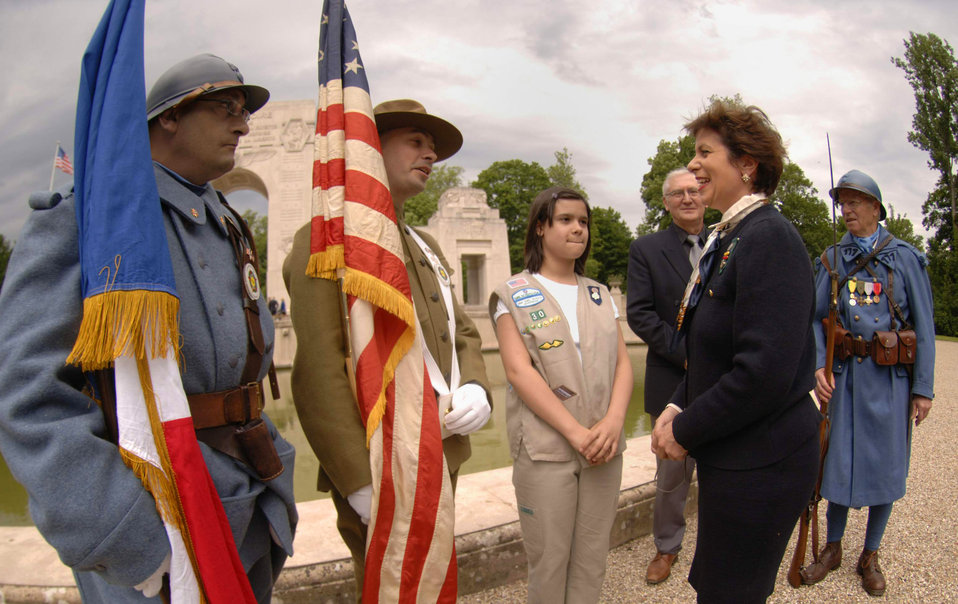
America's first combat aviators memorialized

Americans Dineen Angrisani and her 11-year-old daughter Celine Rivera speak with French soldiers dressed in vintage World War I uniforms at the Lafayette Escadrille memorial ceremony outside of Paris May 23. Ms. Angrisani is the Committee Chair for U.S.A. Girl Scouts Overseas in Paris and is actively involved in annual ceremonies at the memorial.